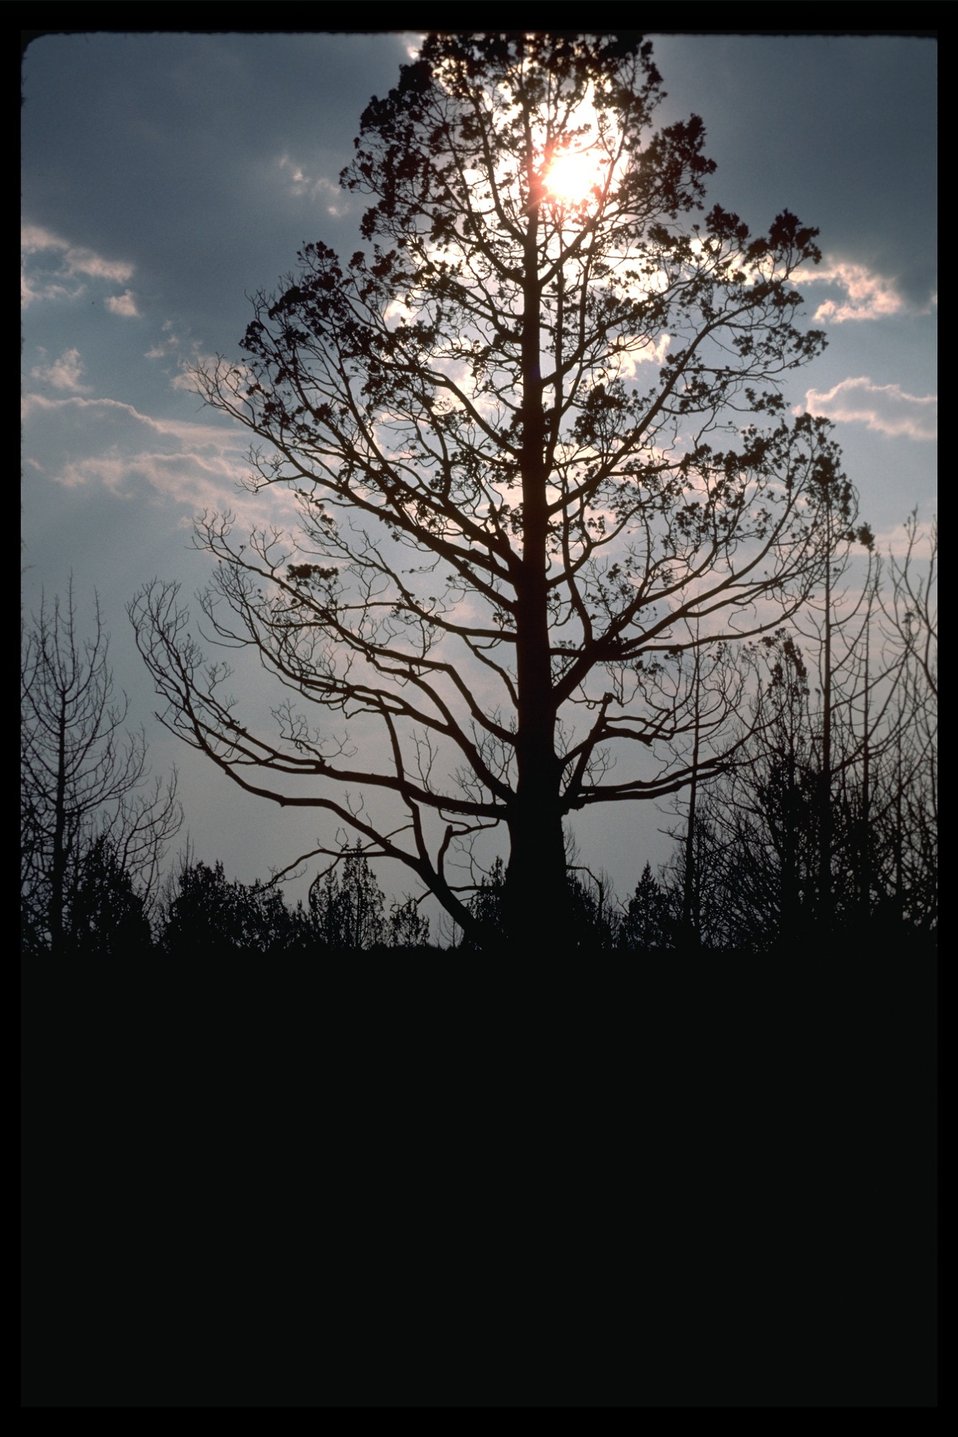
Silhouette of tree at Pine Spring fire. (No Flames)